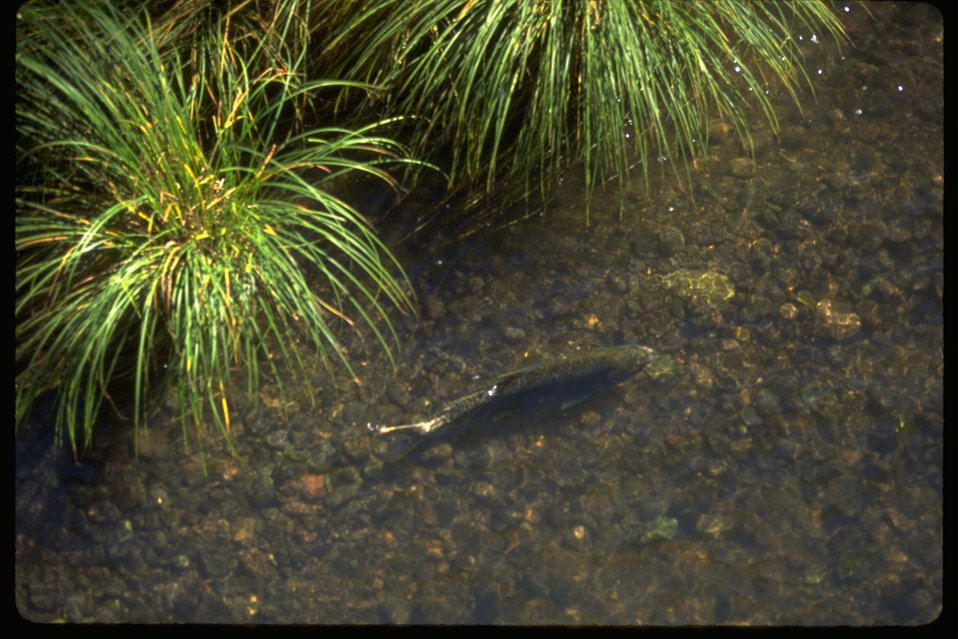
A spawning Salmon moves along the riverbed of the Big Butte Creek.